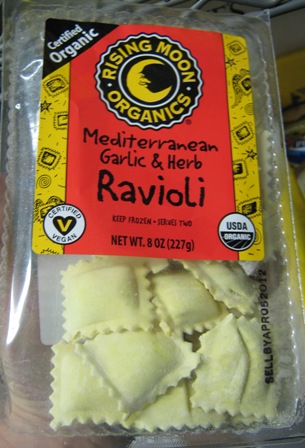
RECALLED - Ravioli

December 14, 2011 - Product Recall - Rising Moon Organics Announces a Voluntary Recall of One Code Date of Mislabeled Mediterranean Garlic & Herb Ravioli Due to Undeclared Soy Allergen.